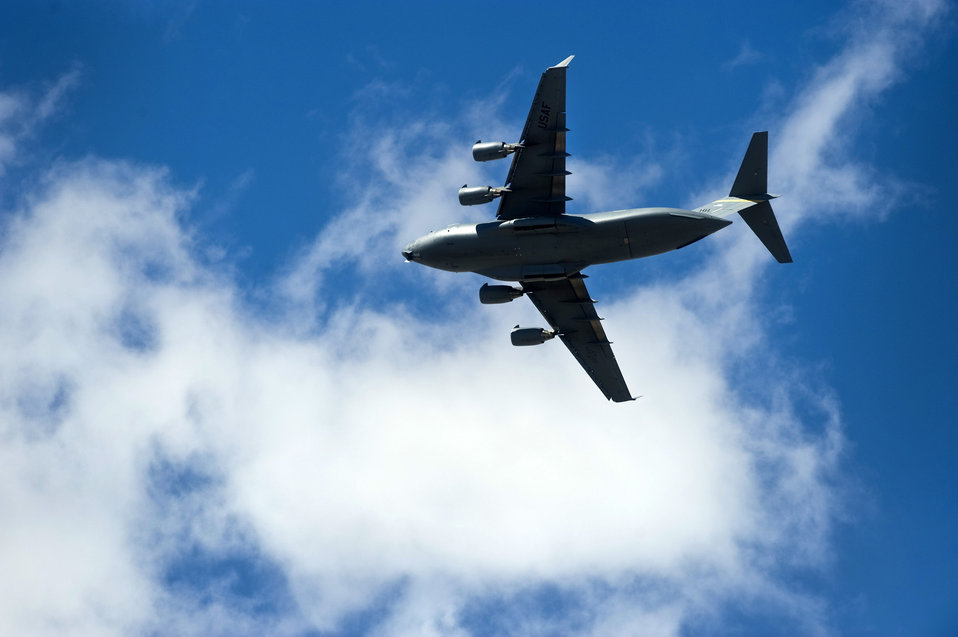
Another successful mission

A C-17 Globemaster III flies above Nellis Air Force Base, Nev., after completing a mission May 18, 2011, during a mobility air forces exercise.